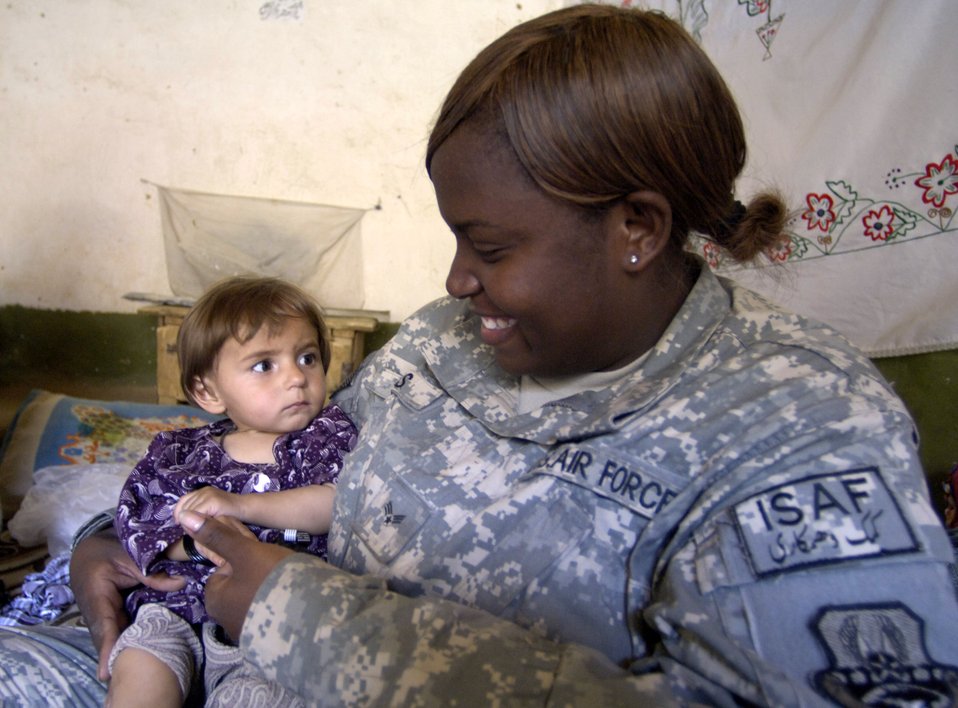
Airmen trek over mountains to deliver aid in Afghanistan

Panjshir Provincial Reconstruction Team member Senior Airman Alicia Woods makes friends with a village girl Aug. 7 in Roydara village in the Shutol district of Panjshir province, Afghanistan. Airman Woods is a medical technician deployed from Lackland Air Force Base, Texas. She and her fellow PRT members made an 11-mile round-trip trek over a mountain pass and into a river valley to provide medical care to Afghans living in Roydara.